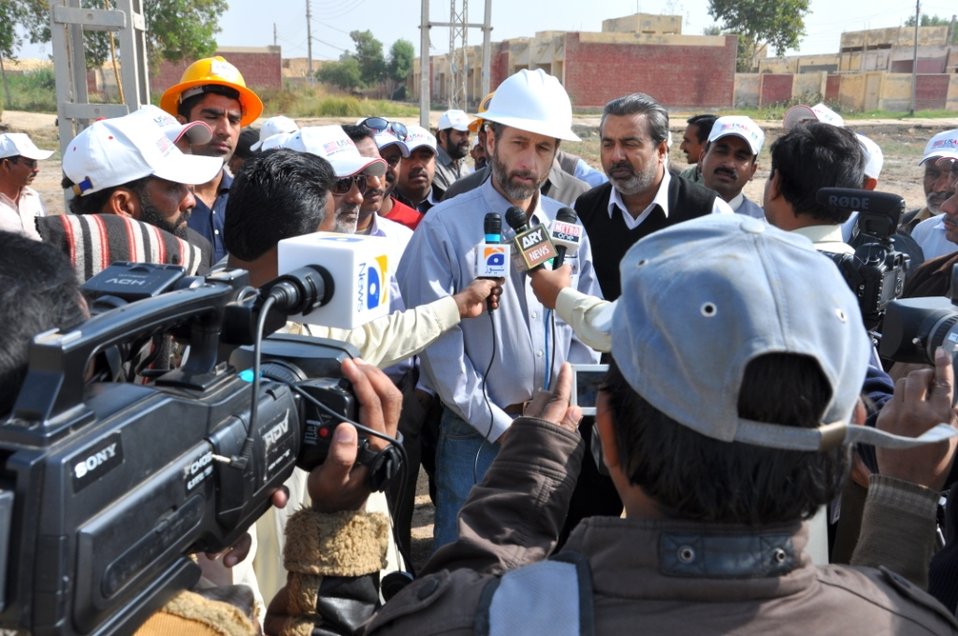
Power Distribution Safety Training Program

Jamshoro, December 18, 2011 - Robert Dalton,Senior Lineman Training Expert from the USAID Power Distribution Program highlighting the safety training program and its objectives to media personnel.